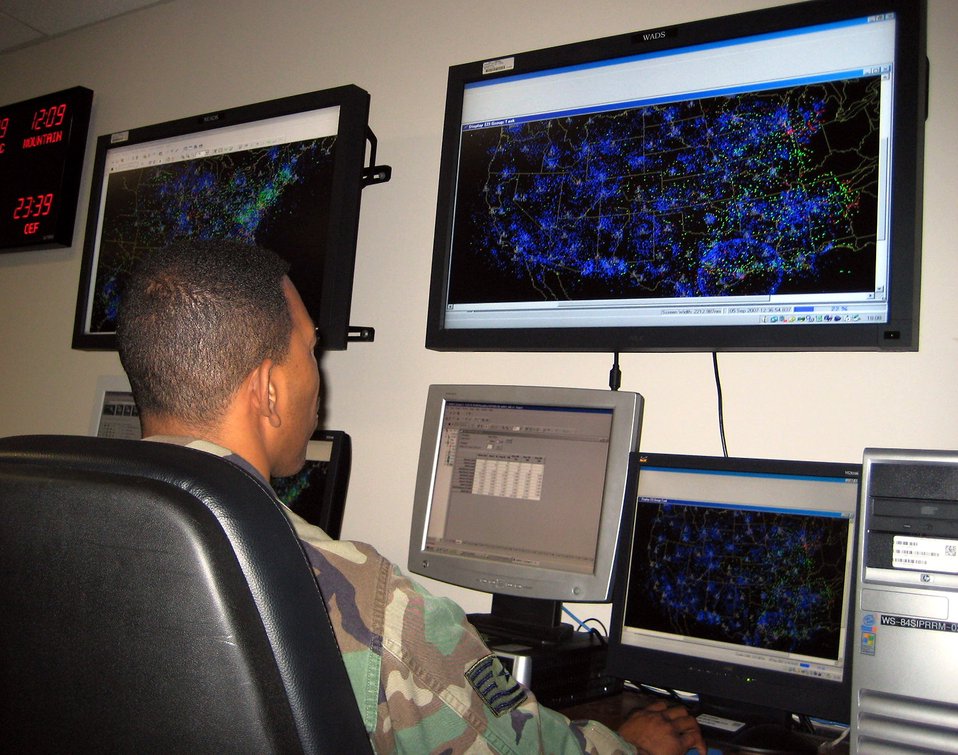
Air Force units assist in search for adventurer Steve Fossett

Tech. Sgt. Anthony Church analyzes raw radar data recorded over the Sierra Nevada to assist authorities in the rescue efforts for adventurer Steve Fossett Sept. 5. Sergeant Church is a 84th Radar Evaluation Squadron radar data analyst.